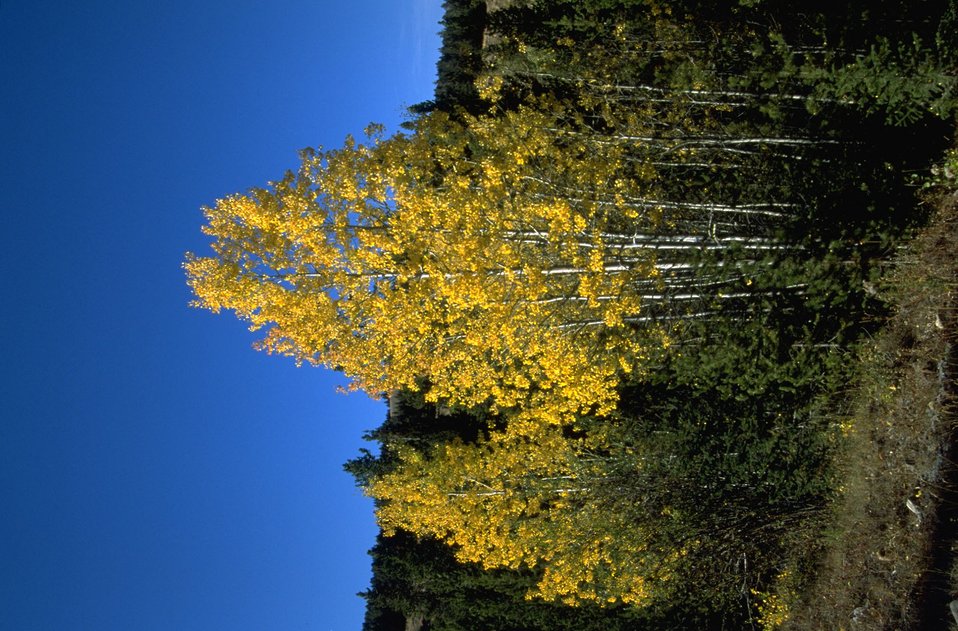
Aspen turning to autumn colors